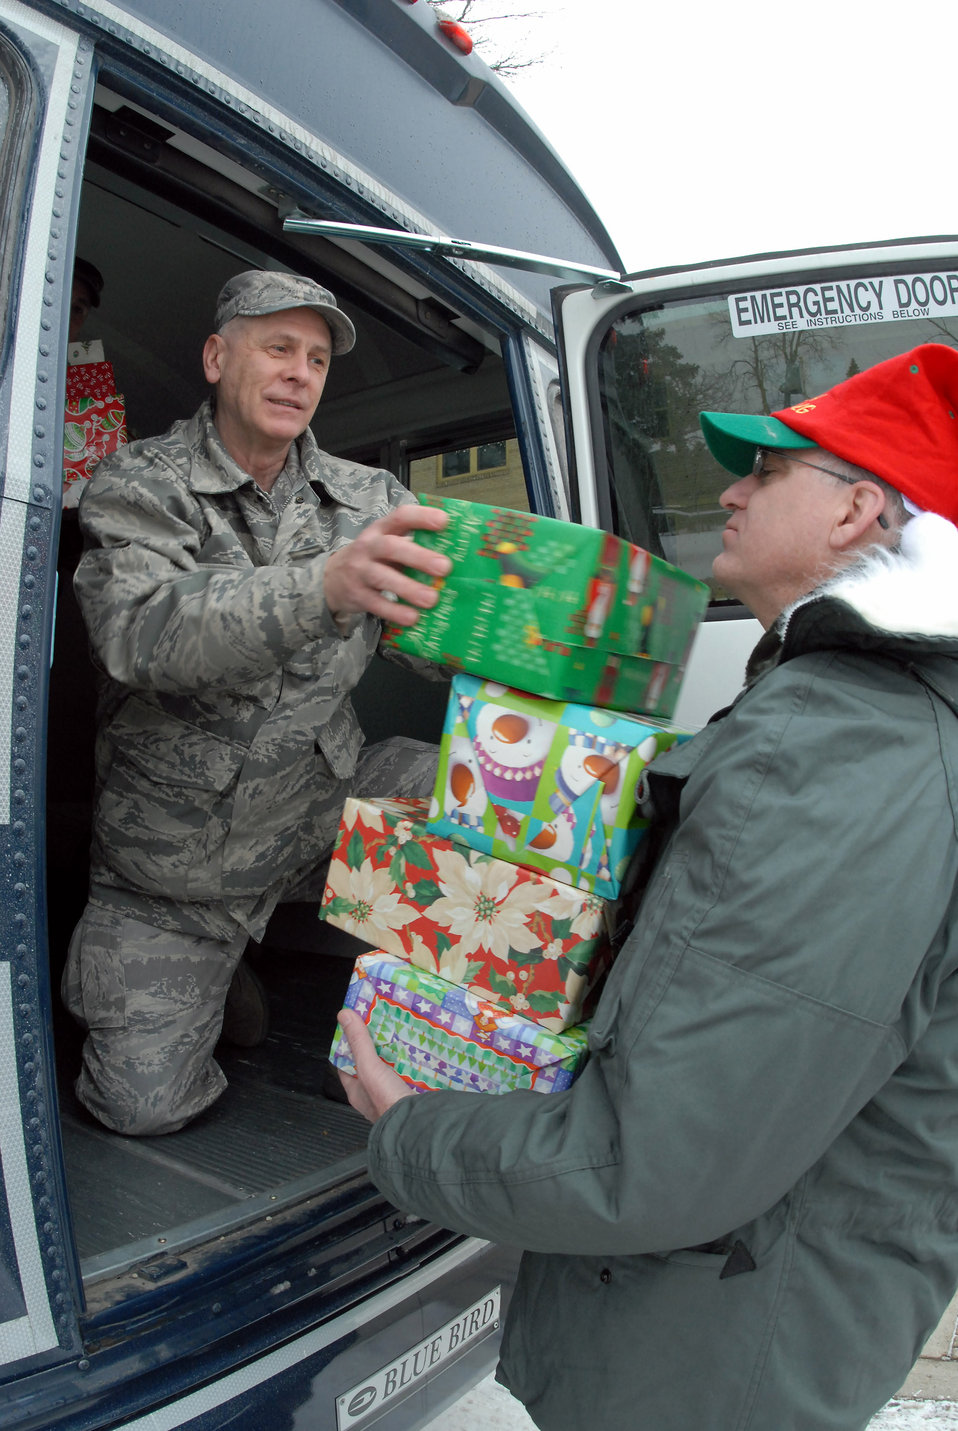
Airmen deliver Christmas

Senior Master Sgt. Paul Tangen hands Christmas gifts to Chaplain (Lt. Col.) John Flowers as they deliver the presents to the North Dakota Veteran's Nursing Home Dec. 10 in Lisbon, N.D. The gifts are given to veterans at the nursing home by the North Dakota Air and Army National Guard each December using funds raised through personal donations given by the North Dakota National Guard members. Sergeant Tangen is the the 119th Wing first sergeant, and Chaplain Flowers is the the 119th Wing chaplain.